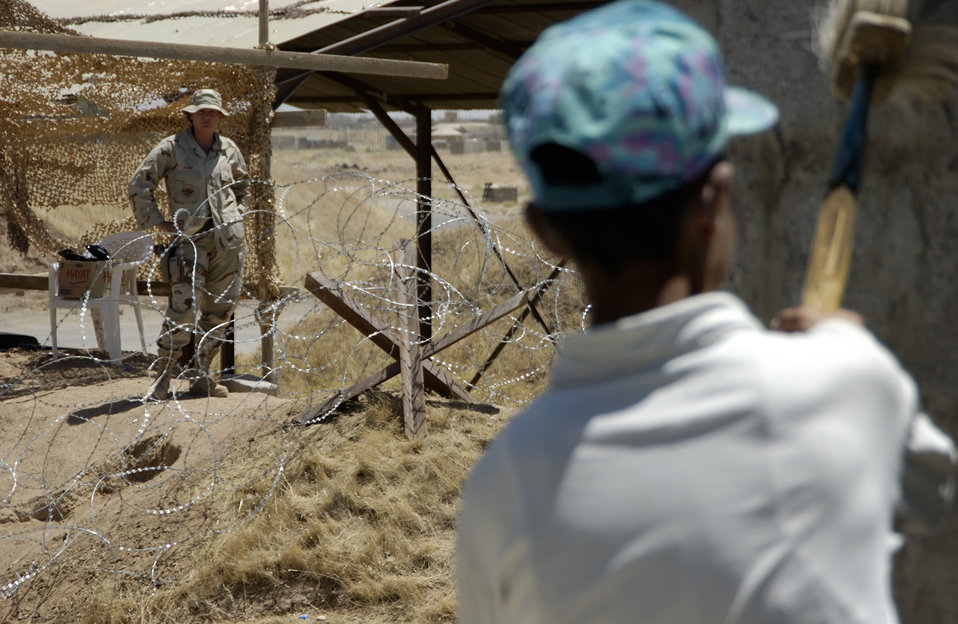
Airmen defend inside the wire

KIRKUK AIR BASE, Iraq -- Airman 1st Class Jennifer Pemp monitors third-country nationals as they construct a building here. Hundreds of local employees work on the base daily under the watchful eye of escorts. Airman Pemp is deployed from Mountain Home Air Force Base, Idaho.